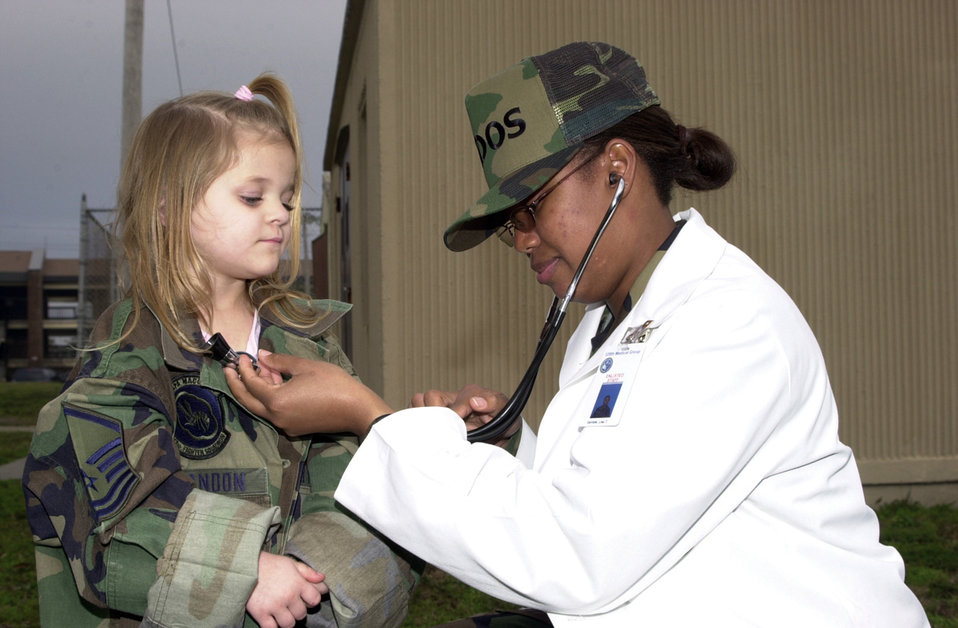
Children experience 'deployment' firsthand

TYNDALL AIR FORCE BASE, Fla. (AFPN) -- McKenna Brandon is checked out by Staff Sgt. Lisa Gamble, an aerospace medical technician, at the physical exam stop of the deployment line.